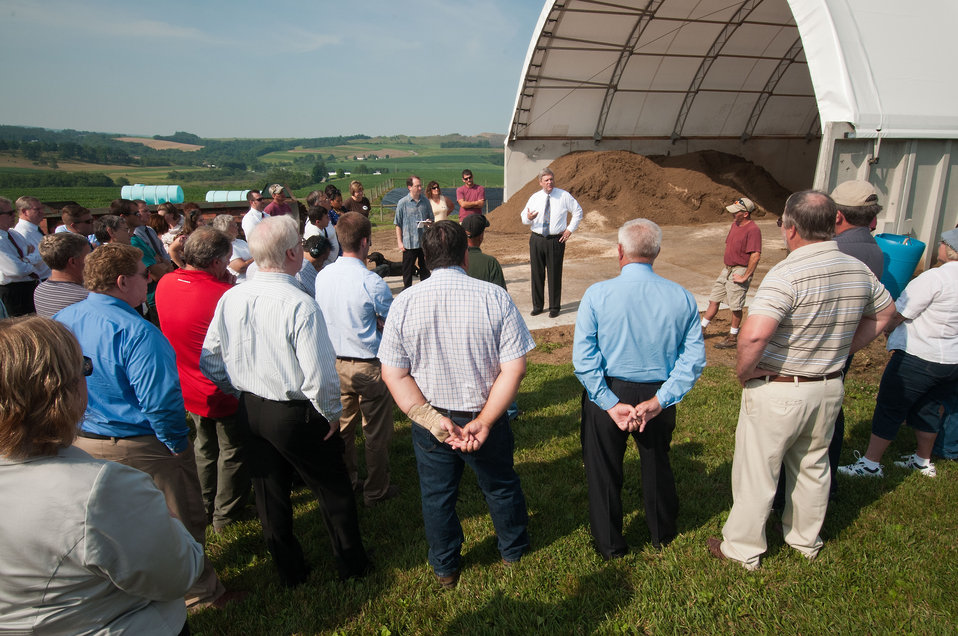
Agriculture Secretary Tom Vilsack visited Pennwood Dairy Farms in Berlin, PA on Tuesday, July 17, 2012. During his visit Secretary Vilsack highlighted the U.S. Department of Agriculture’s (USDA) energy efficiency programs and announced a new effort to help rural consumers make affordable, energy-efficient improvements to their homes and businesses. He also discussed the economy of rural America, the drought and the next Farm Bill.